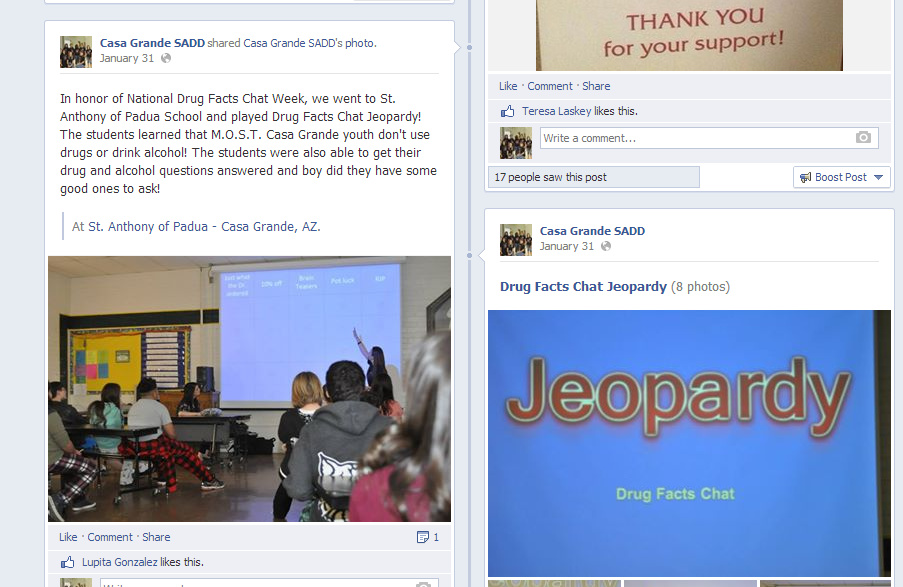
Social Media Connection with NDFW in AZ

In honor of the 2014 National Drug Facts Week, Casa Grande Alliance went to St. Anthony of Padua School in Casa Grande, AZ and played Drug Facts Chat Jeopardy! The students learned that M.O.S.T. (Our Social Norm Campaign that stands for Making Our Students Think) Casa Grande youth don't use drugs or drink alcohol! The students were also able to get their drug and alcohol questions answered and boy did they have some good ones to ask!